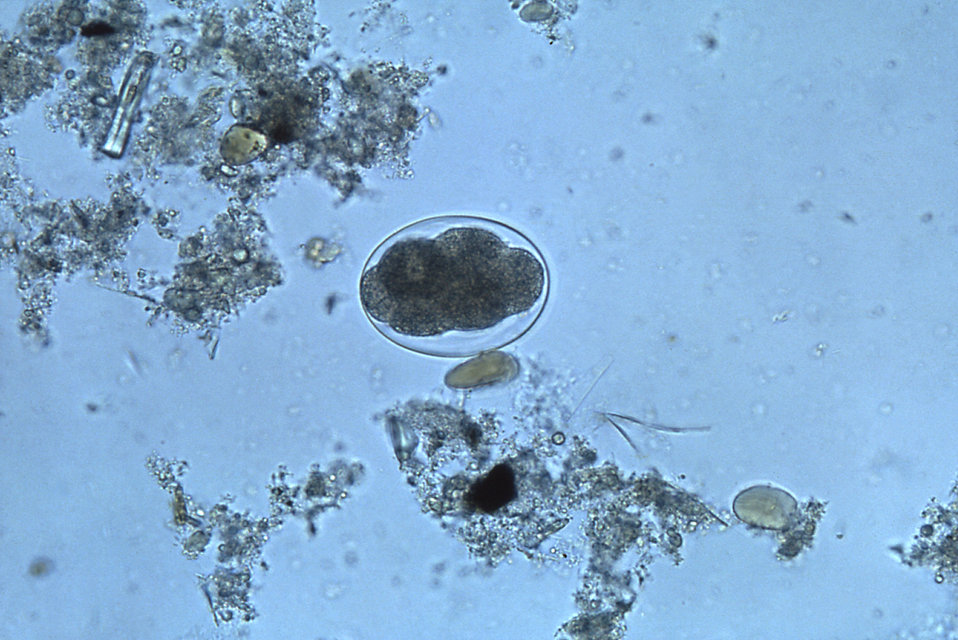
This micrograph shows a hookworm egg from an undetermined species of origin.